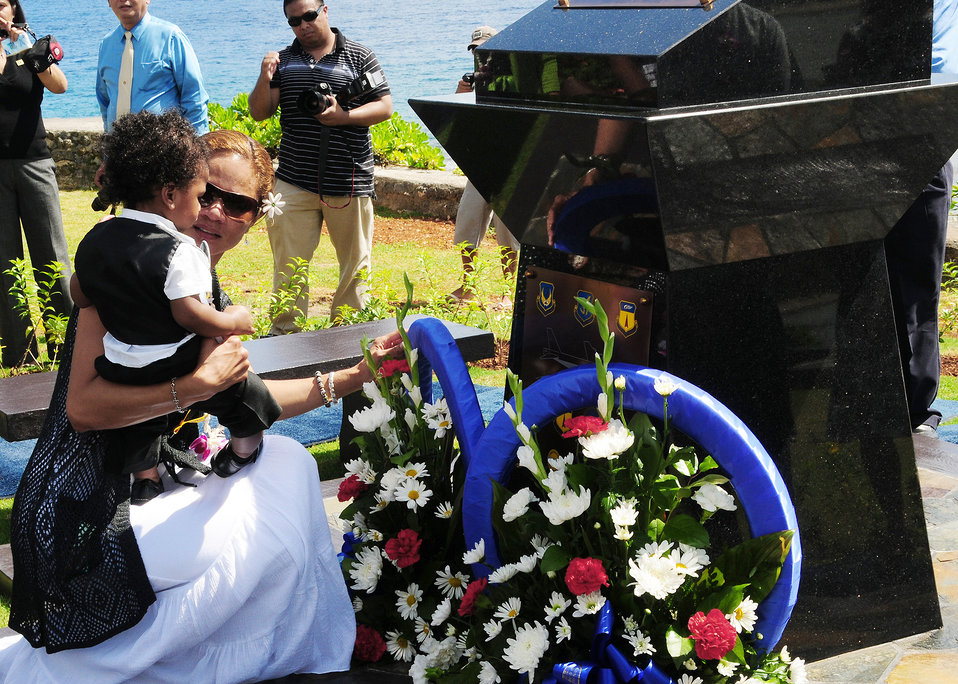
RAIDR 21 memorial

Ursula Martin, wife of Col. George Martin, and their son Guahan Martin lay a wreath at the base of the RAIDR 21 Monument at the Governor's Complex at Adelup Point in Hagatna, Guam, July 20. They placed the wreath in remembrance of the husband and father they lost July 21, 2008, when a B-52 Stratofortress -- call sign RAIDR 21 -- crashed off the coast of Guam during a mission. Colonel Martin was one of six crewmembers who perished. More than 300 family, friends and guests attended the ceremony and monument unveiling.